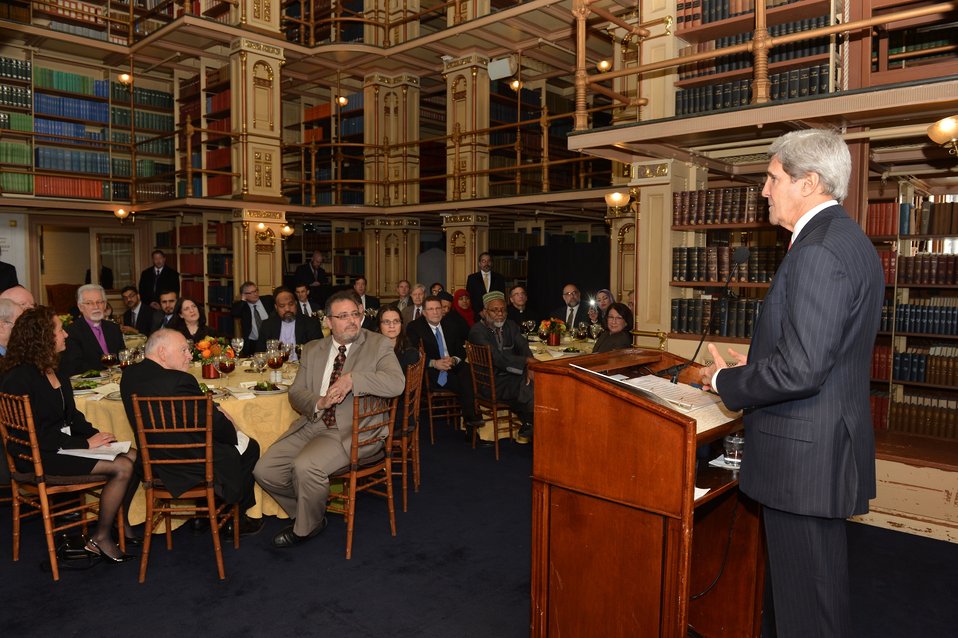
Secretary Kerry Delivers Remarks at the Georgetown University Interfaith Luncheon

U.S. Secretary of State John Kerry delivers remarks at the Georgetown University Interfaith Luncheon at Georgetown University in Washington, D.C., on January 28, 2014.